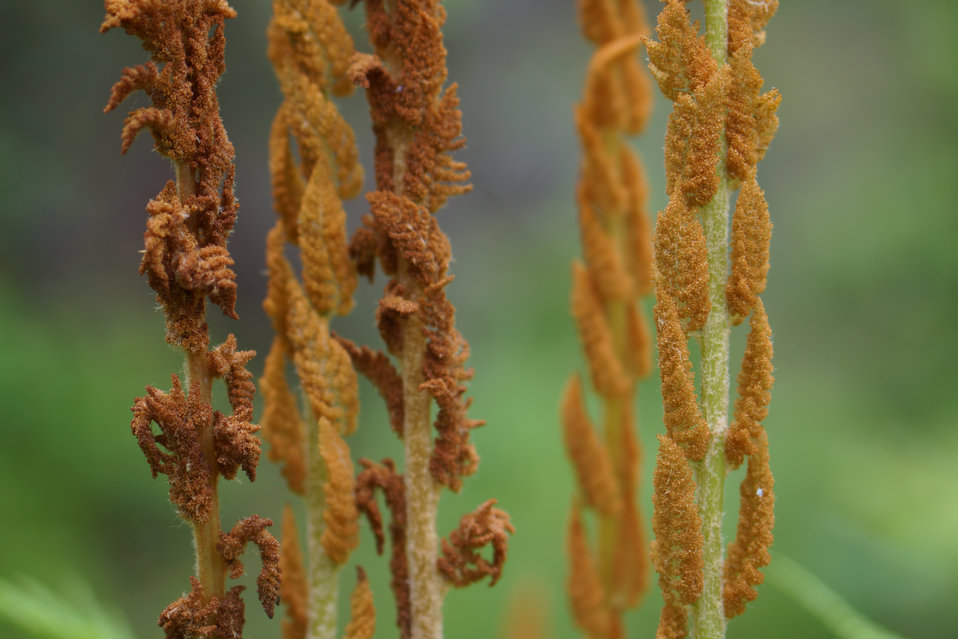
Fern fronds

In May, bog conservationists from Tennessee, North Carolina, and Georgia convened in the north Georgia mountains for the spring, 2014 meeting of the Bog Learning Network. The event provided an opportunity for biologists to see, first hand, the result of management efforts at two north Georgia bogs. More importantly, the outings provided an opportunity to share innovative approaches to bog management, such as the role of the Georgia Plant Conservation Alliance in conserving rare plants and coordinating a cadre of volunteers to work on bog management.

The Bog Learning Network was convened in the winter of 2013 as a way to bring together people working for bog conservation across the Southern Appalachians. Southern Appalachian bogs are one of North America’s rarest habitats and home to many rare plants and animals.